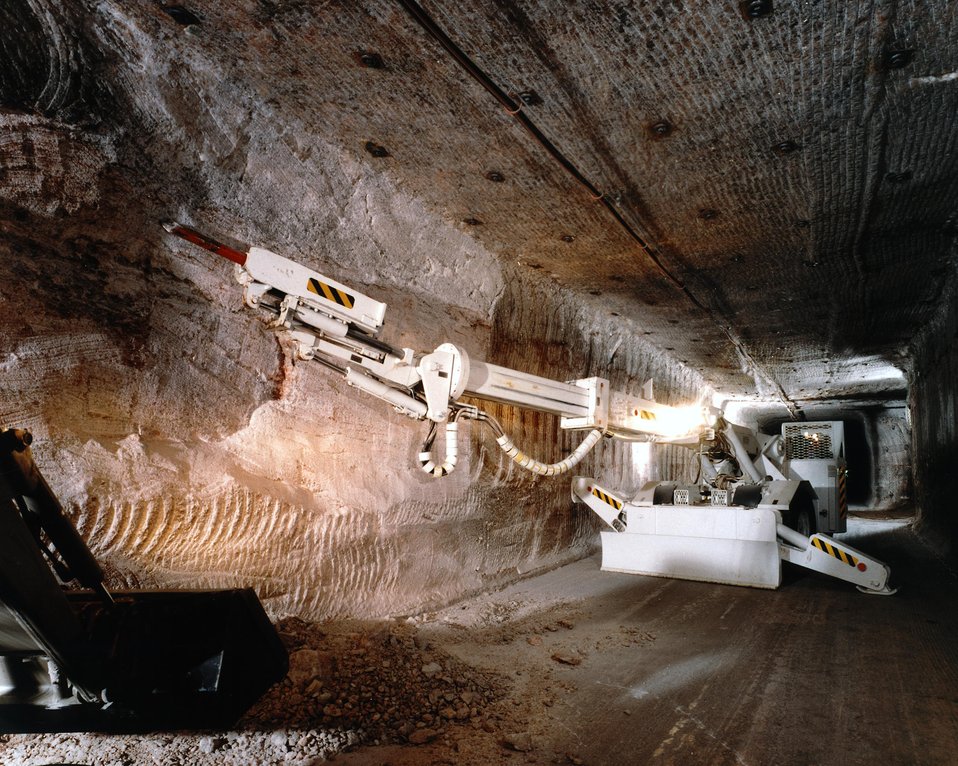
THE FLETCHER SCALER, AN UNDERGROUND SCALING MACHINE AT THE WIPP.

THE FLETCHER SCALER IS USED AT THE WASTE ISOLATION PILOT PLANT TO REMOVE LOOSE SALT FROM THE WALLS 2,150 FEET BELOW THE SURFACE. THE SCALER HELPS MAINTAIN THE UNDERGROUND PANELS, REMOVING LOOSE ROCK FROM WALLS AND CEILING, UNTIL DISPOSAL OPERATIONS BEGIN AT THE PLANT AND TRANSURANIC WASTE IS EM-PLACED.